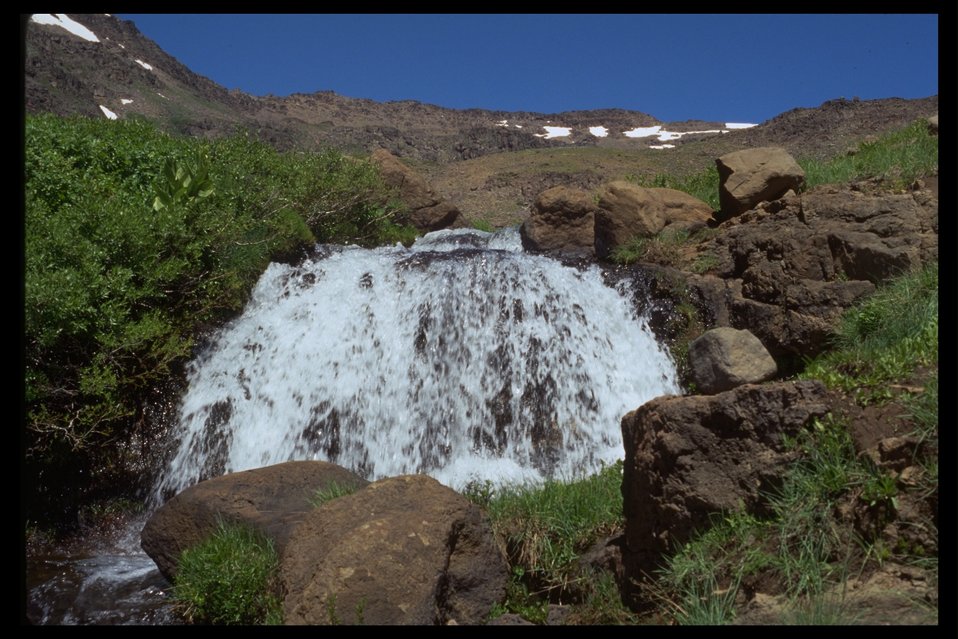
High Steens waterfall on Wild Horse Creek. (WSA 2-85F)